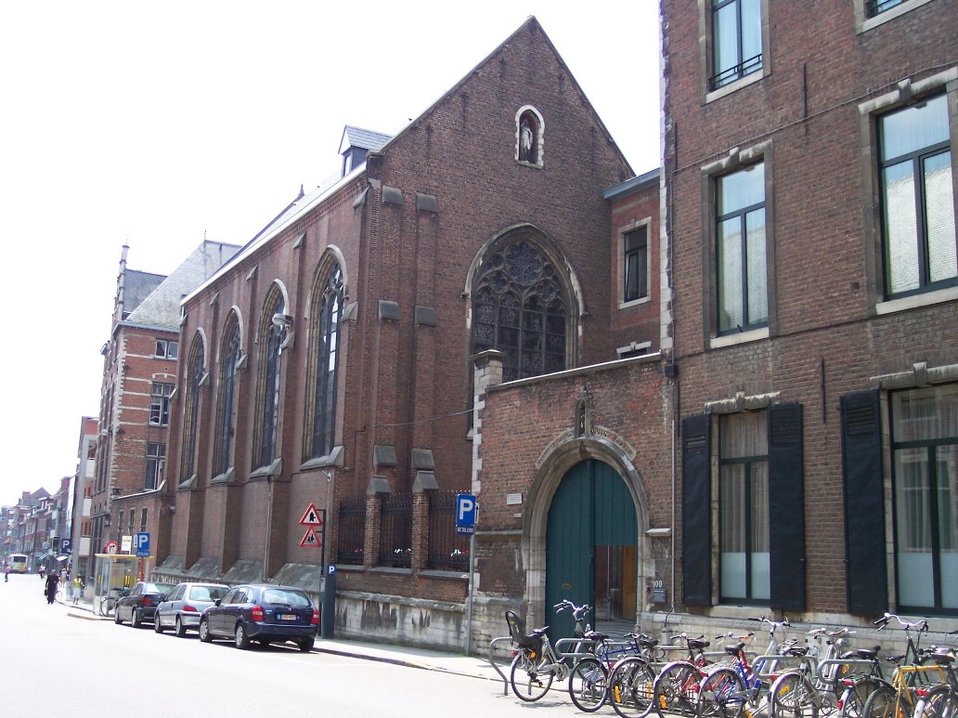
Front of the American College, Naamsestraat 100, Leuven